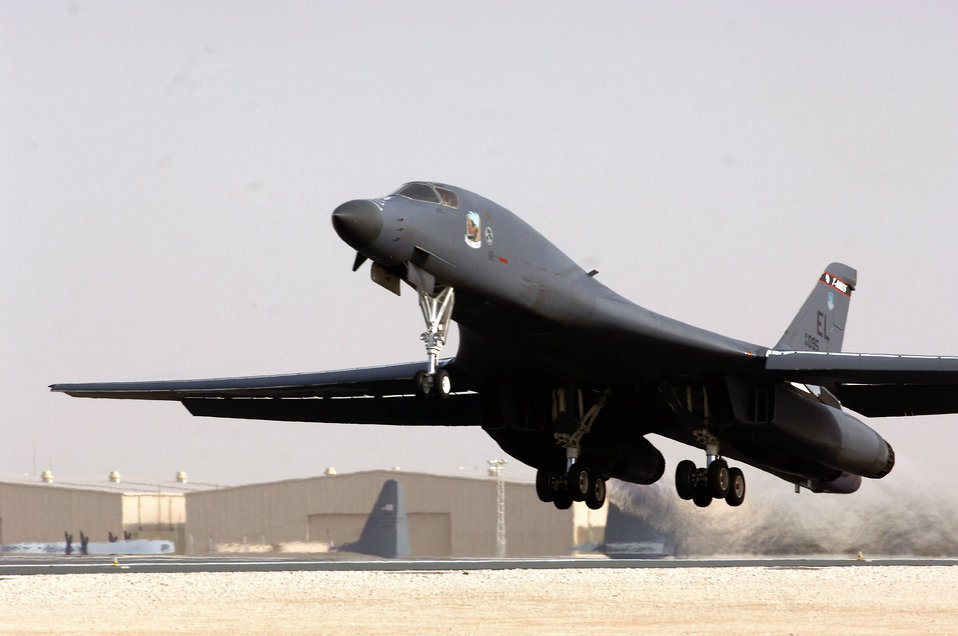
Nov. 11 airpower summary: B-1B bombs enemy forces

A B-1B Lancer takes off from a base in Southwest Asia to support Operations Enduring and Iraqi Freedom. The B-1B has the capability to carry guided and unguided weapons and deliver massive quantities of precision and non-precision weapons against specific targets.